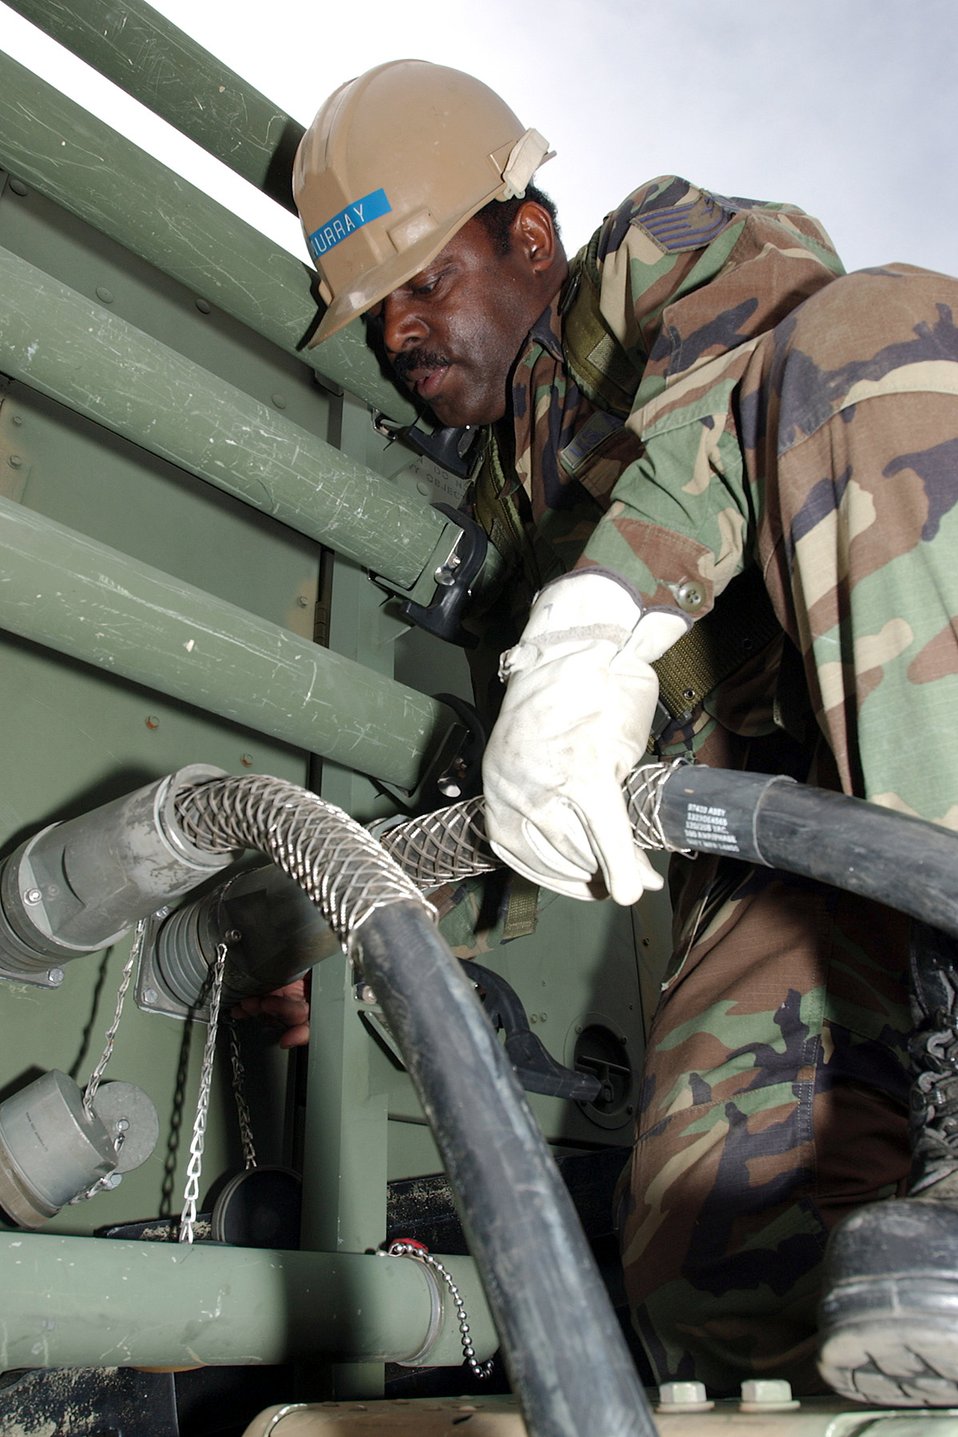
The set up

MCENTIRE AIR NATIONAL GUARD STATION, S.C. -- Tech. Sgt. Murray Harrison helps assemble a mobile tower here April 1. Sergeant Harrison is a member of the South Carolina Air National Guard's 245th Air Traffic Control Squadron. The guard unit is conducting field exercises during its April unit training assembly.